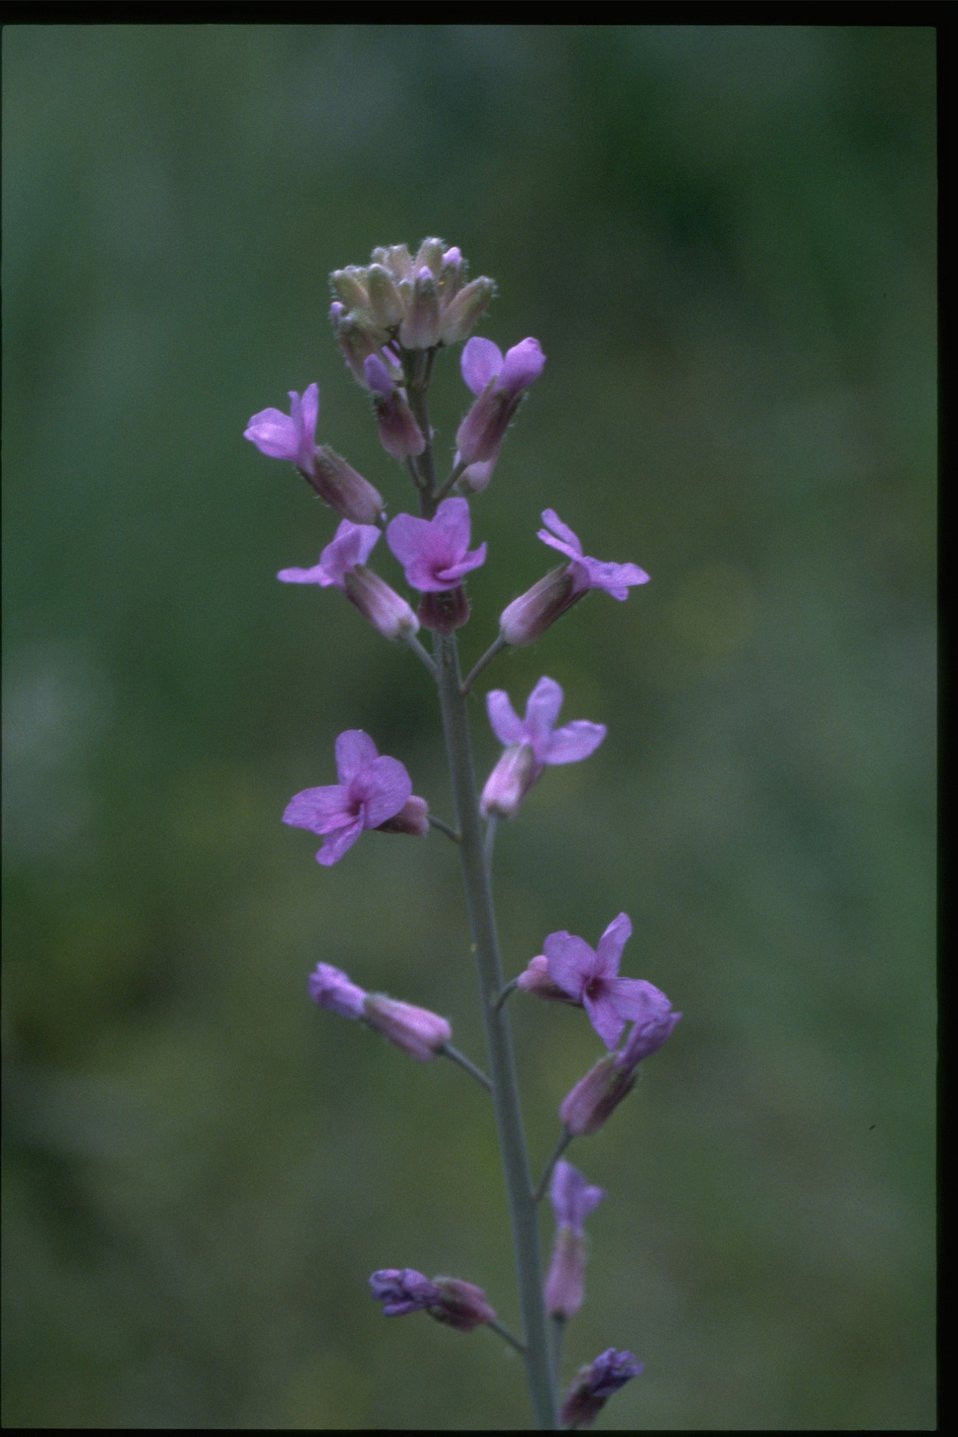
Closeup shot of Penstemon wildflower.